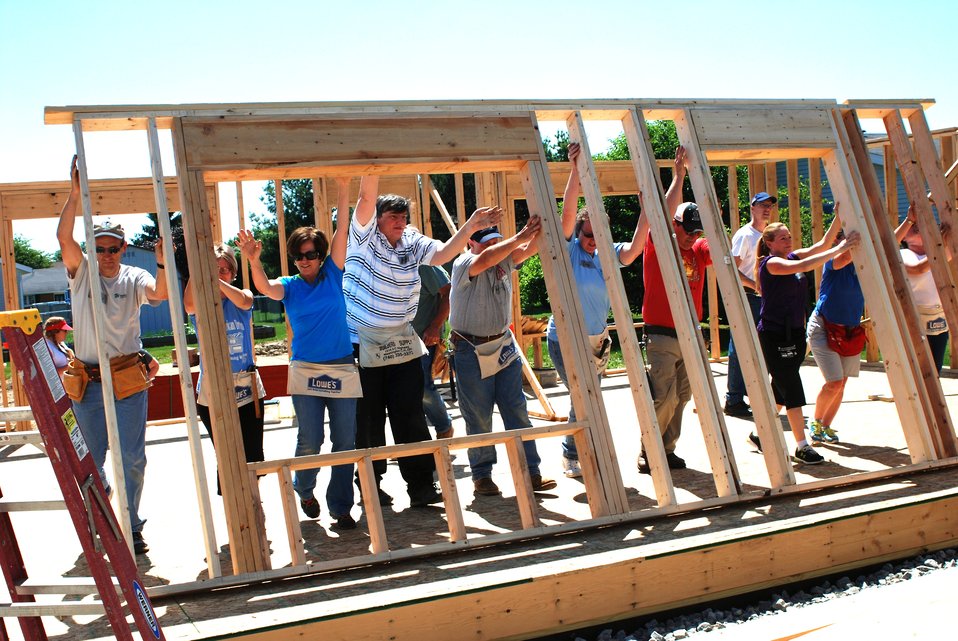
140606 Ohio Habitat walking up the last wall

U.S. Department of Agriculture (USDA) Rural Development (RD) Ohio State employees help construction workers 'walk up a wall' during a day of volunteering at a Marysville, OH Habitat for Humanity build. The house, which will belong to Union County resident Michelle Amrine, is the first-ever built-from-the-ground-up collaboration between Habitat for Humanity and USDA RD in Ohio.